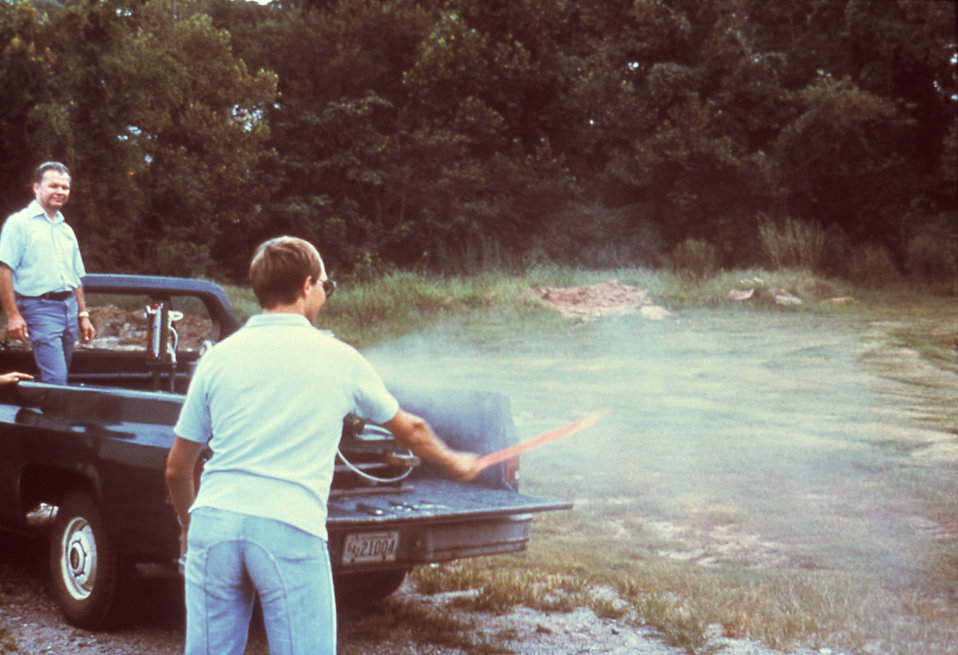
This 1981 photograph depicted two arboviral field technicians, one of whom was collecting airborne insecticide droplets, which were being dispersed from a truck-mounted ultra low volume (ULV) fogger, by quickly swiping a flat wooden paddle through the insecticide spray stream.